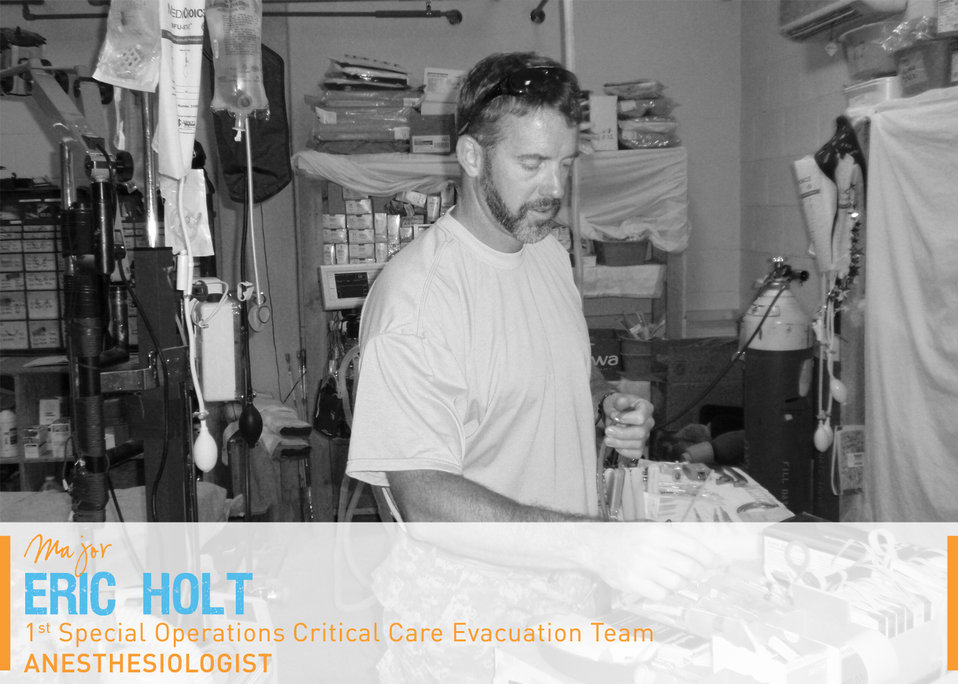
Portraits in Courage Volume 4: Maj. Eric Holt, anesthesiologist, 1st Special Operations Critical Care Evacuation Team. He was part of a Marine special operations team that was struck by an IED under a vehicle. The blast threw him 35 yards from the vehicle. Despite his severe injuries, he attempted to assess and treat his teammates.